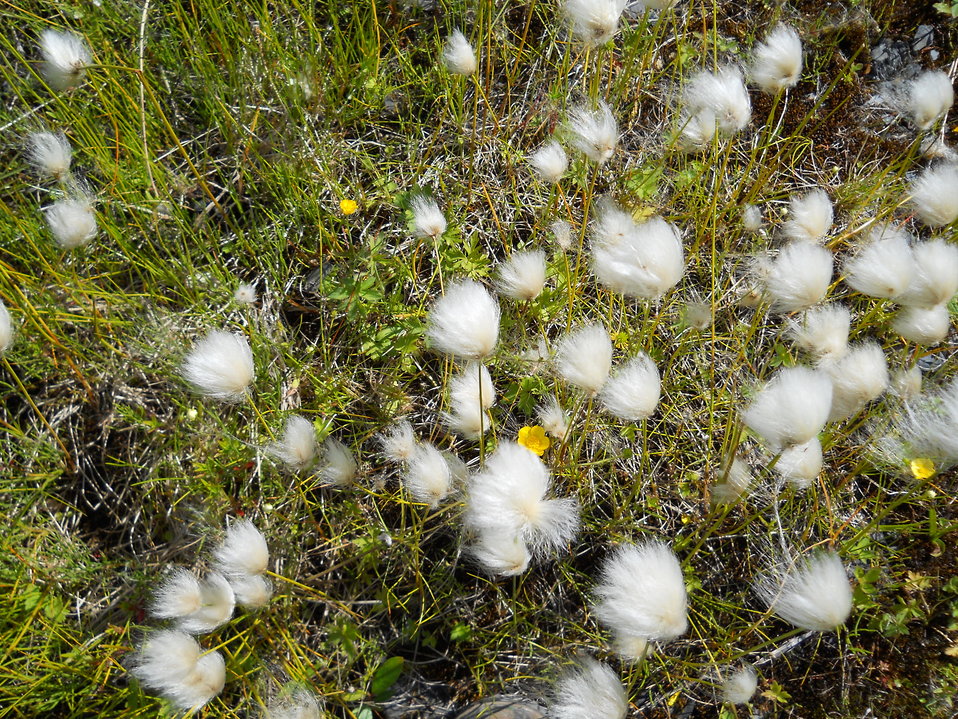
Seeds Ready for Dispersal

Credit: USFWS
Photo taken by a Salmon Camp participant during a nature photography activity.

Source and Contact: Kodiak National Wildlife Refuge